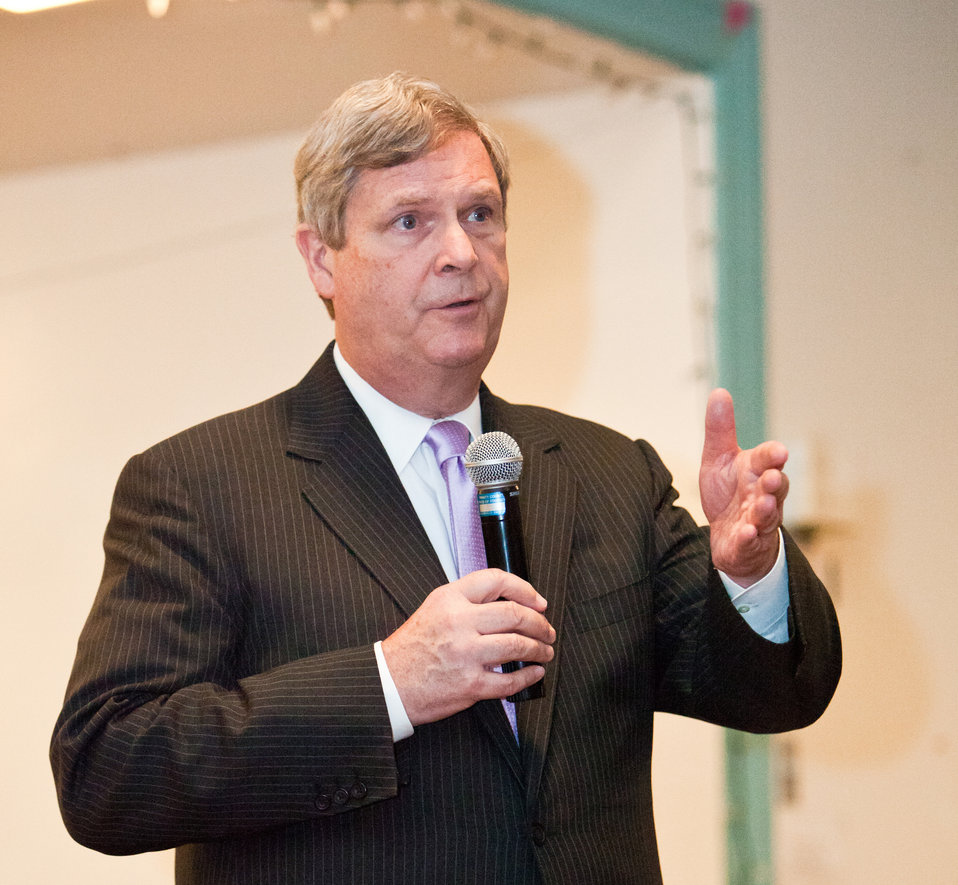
Agriculture Secretary Tom Vilsack speaks at a community roundtable in Weaverville, CA on Dec. 10, 2012.